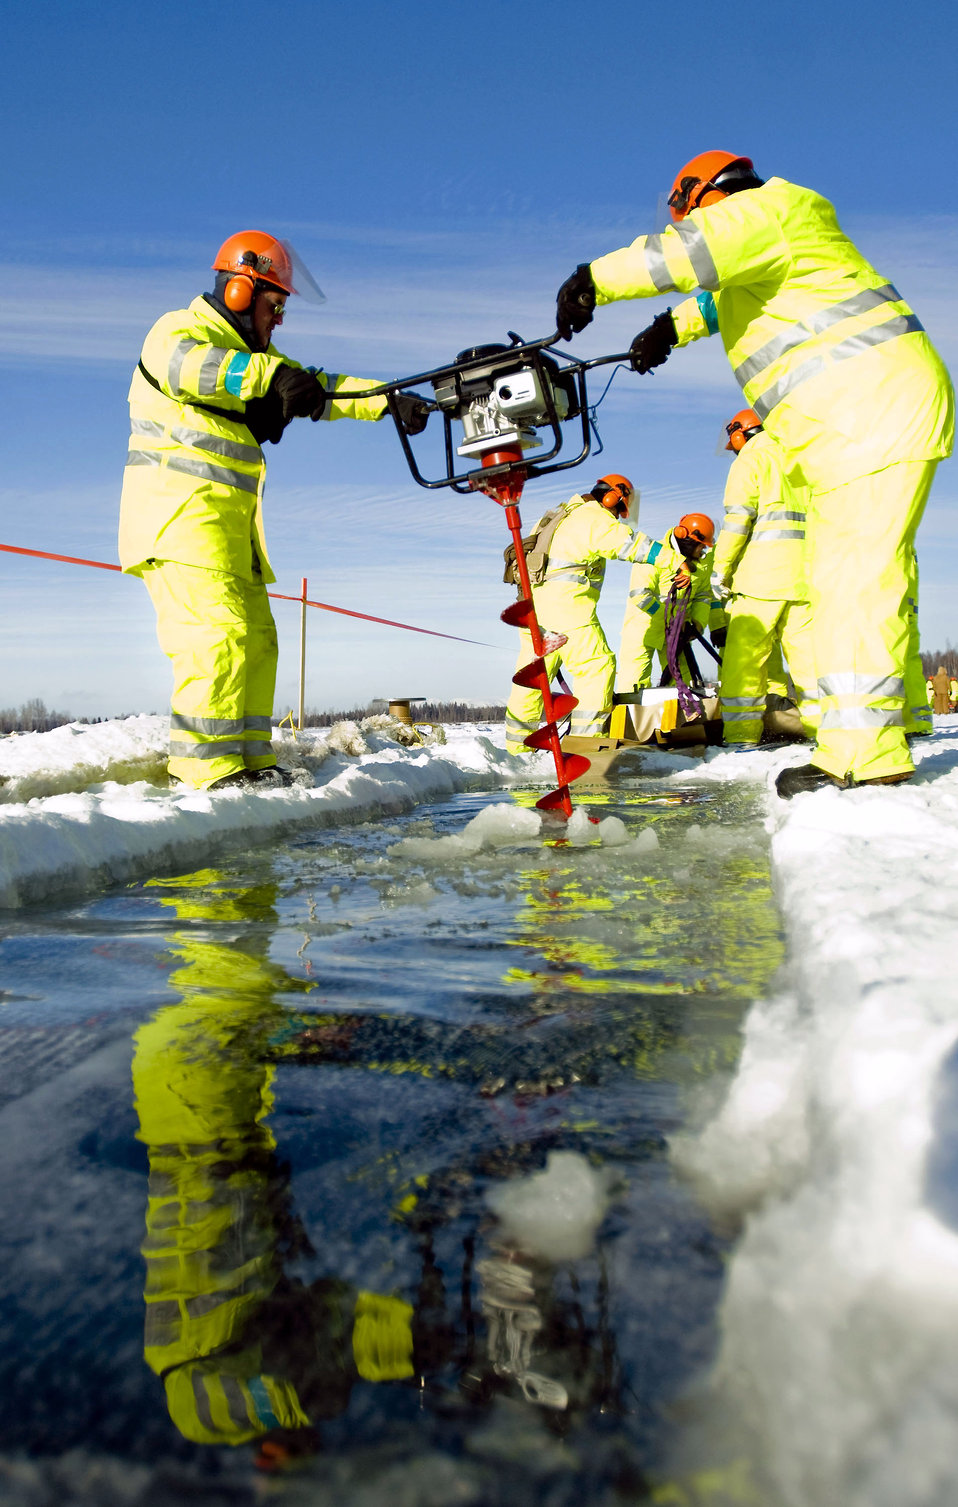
Don't slip!

Master Sgt. James Fraser and Tech. Sgt. Eddie Campbell drill a hole in the ice with an auger Feb. 24 at Six Mile Lake near Elmendorf Air Force Base, Alaska. The Airmen from the 611th Civil Engineer Squadron were practicing oil spill recovery tactics.